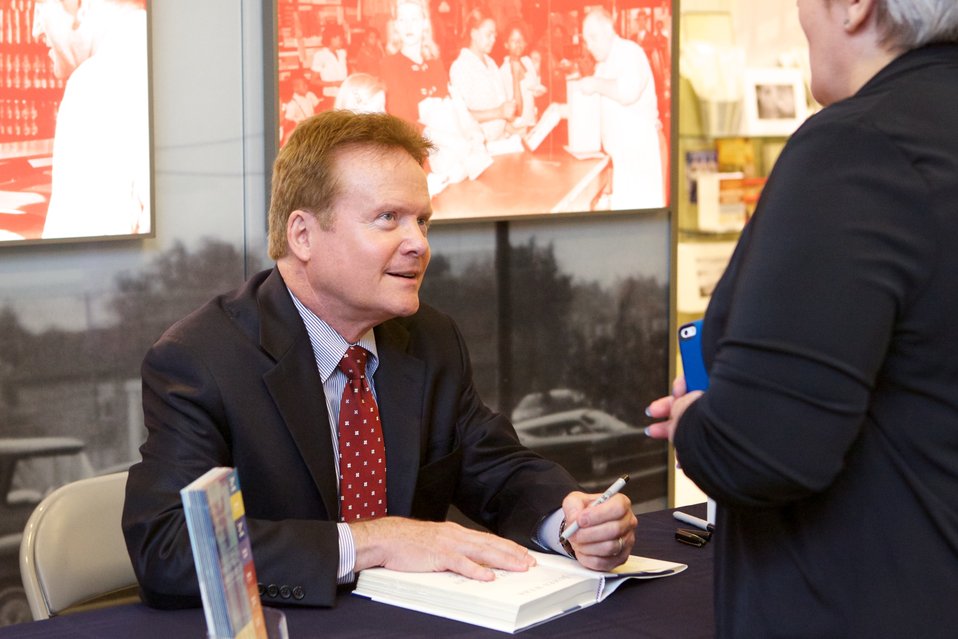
I Heard My Country Calling: A Memoir I Heard My Country Calling: A Memoir; James Webb, Former Senator and author, autographs books after his lecture